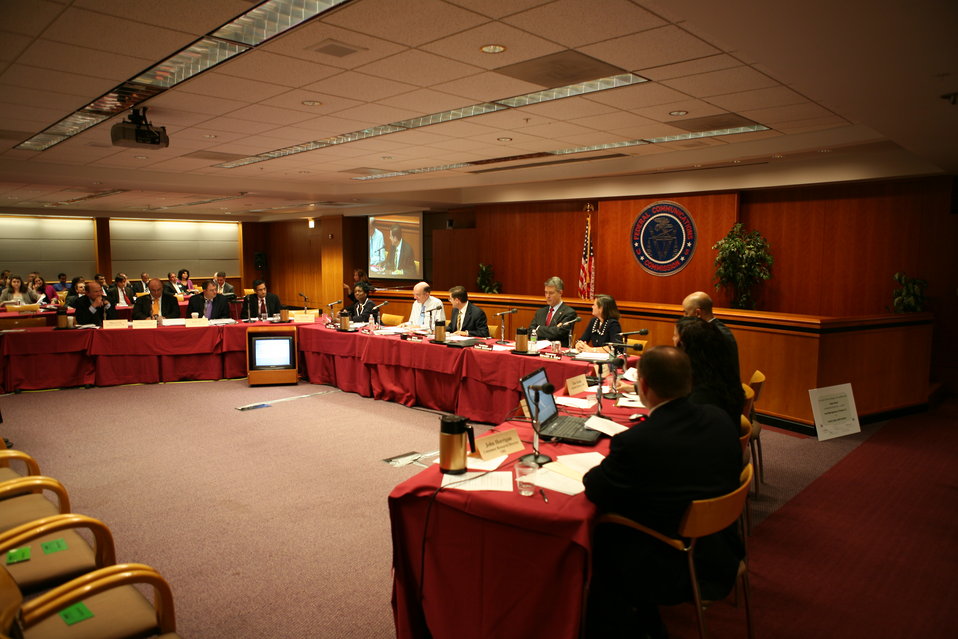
Midterm Review9

Broadband Midterm Review, 9-29-09